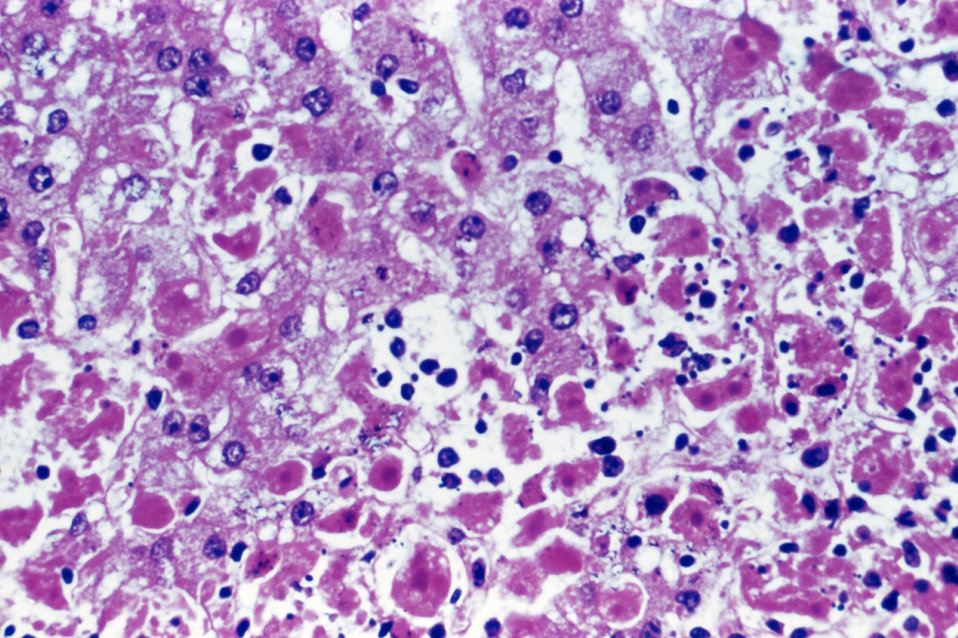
This micrograph of human liver tissue infected with the Ebola virus, the cause of Ebola hemorrhagic fever (Ebola HF), depicts the hepatic histopathologic changes that occur due to this illness.